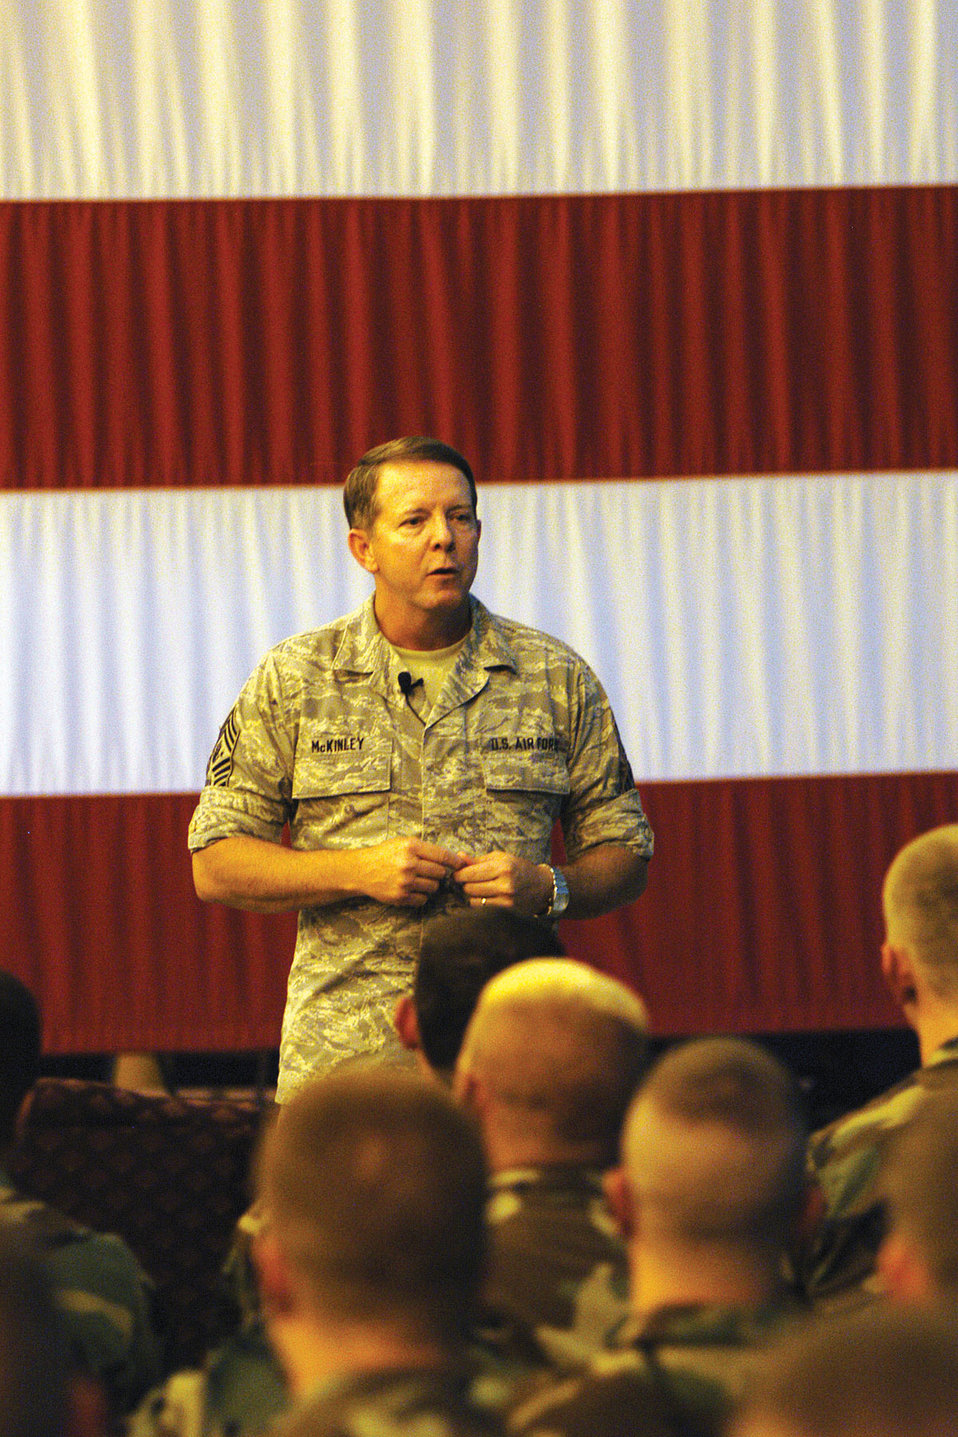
CMSAF McKinley gets firsthand look at Offutt missions

Chief Master Sgt. of the Air Force Rodney J. McKinley addresses Airmen at an enlisted call at Offutt Air Force Base, Neb., Sept. 7. Chief McKinley spoke about the promotion of Airman pride and the issues he plans to focus on during his tenure as the Air Force's top enlisted member.